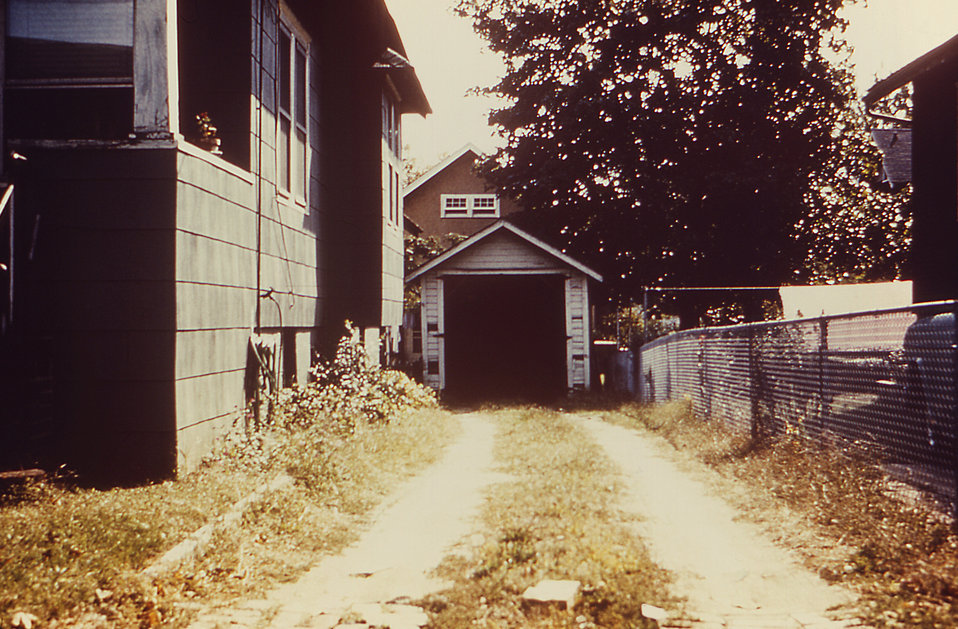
Behind this dwelling was an old chicken house, which made for an excellent 'resting station' for adult mosquitoes.